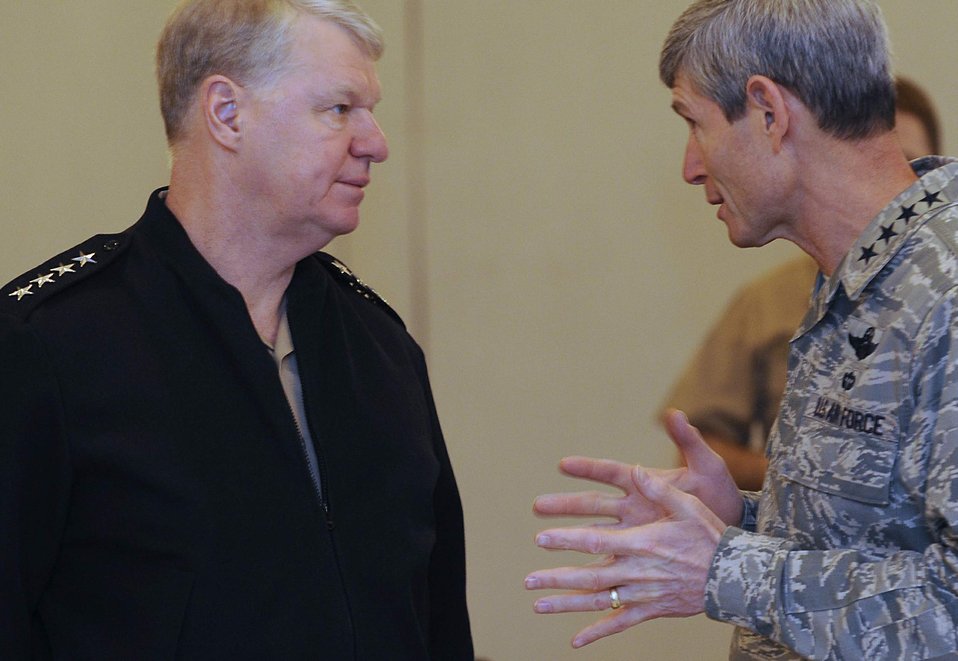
Navy-Air Force Warfighter Talks

Chief of Naval Operations Adm. Gary Roughead and Air Force Chief of Staff General Norton Schwartz have an off-line discussion during one of the breaks at the Navy-Air Force Warfighter Talks March 18 at Bolling AFB, D.C. The Air Force hosted this year?s event which covered topics ranging from tactical air planning, to nuclear matters.